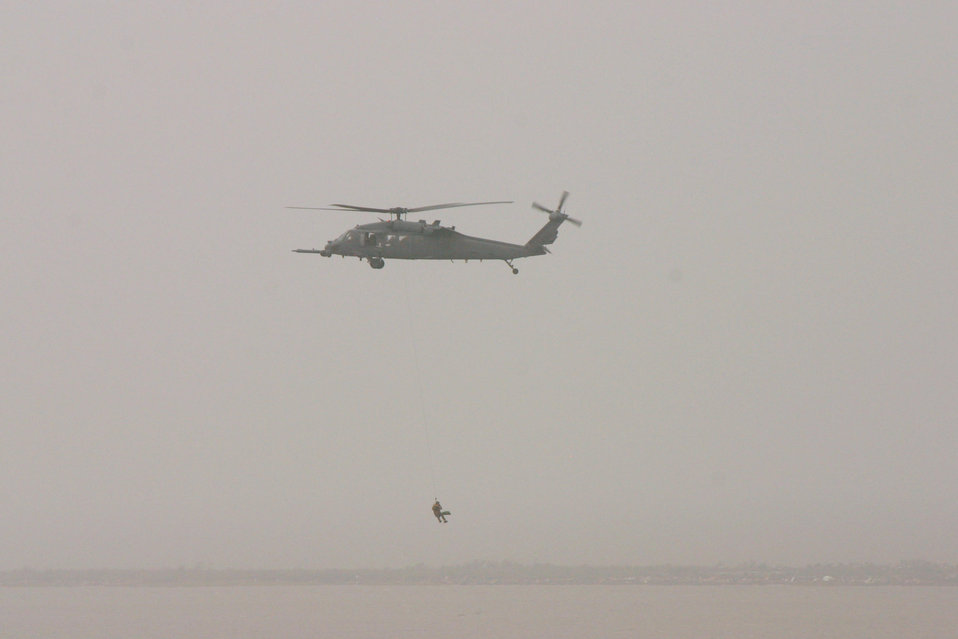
Helicopter aircrews rescue hurricane victims

A Joint Task Force-129 pararescueman hoists a hurricane victim in to the hovering HH-60G Pave Hawk helicopter Sept. 13 near Galveston, Texas. The JTF-129 crews rescued 48 people and pets stranded